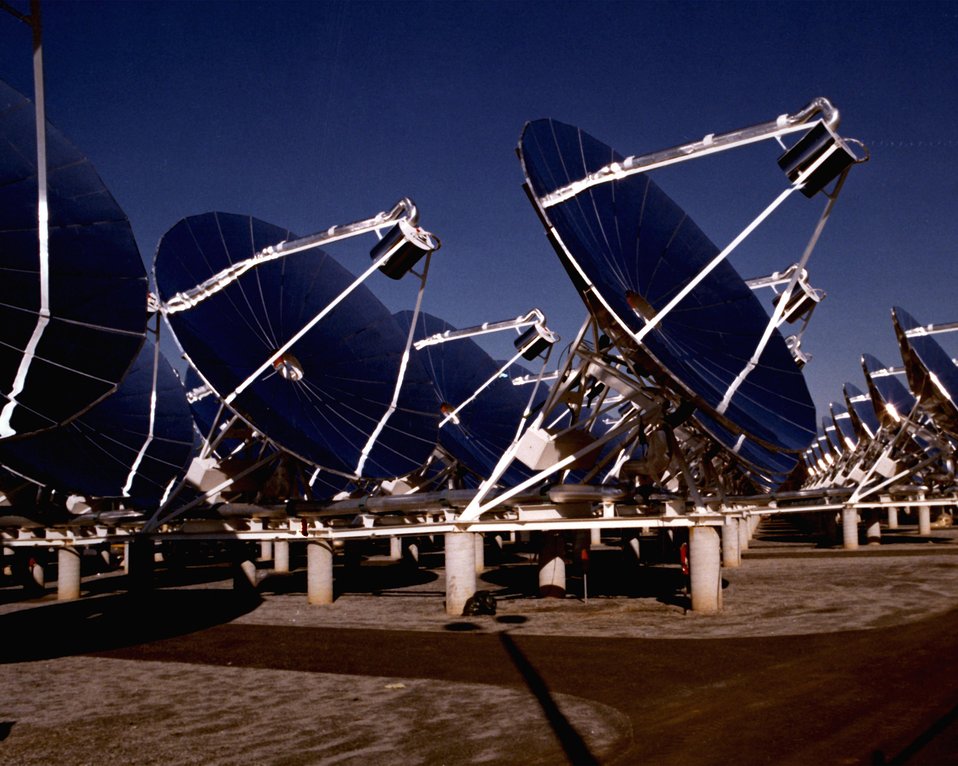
VIEW OF THE SOLAR CONCENTRATOR/COLLECTORS - PART OF THE SOLAR TOTAL ENERGY SYSTEM.

UNIT FOR LATER USE. IN THE EXCHANGER, THE TRANSFER FLUID BOILS AND SUPER-HEATS THE WORKING-FLUID STEAM. WHILE THE TRANSFER FLUID IS RETURNED TO THE COLLECTORS TO REPEAT THE CYCLE, THE SUPER-HEATED WORKING FLUID DRIVES A MULTI-STAGE STEAM TURBINE WHICH IN TURN DRIVES AN ELECTRICAL GENERATOR WHICH PRODUCES ELECTRICITY FOR THE SYSTEM'S ELECTRICAL REQUIREMENTS. STEAM IS EXTRACTED FOR THE KNITWEAR MANUFACTURING PROCESSES. THE WORKING FLUID EXHAUSTED FROM THE PRIME MOVER IS COOLED AS IT PASSES THROUGH THE WATER-COOLED CONDENSER. CONDENSER COOLING WATER IS THEN USED FOR HEATING, AIR CONDITIONING, OR HOT WATER.